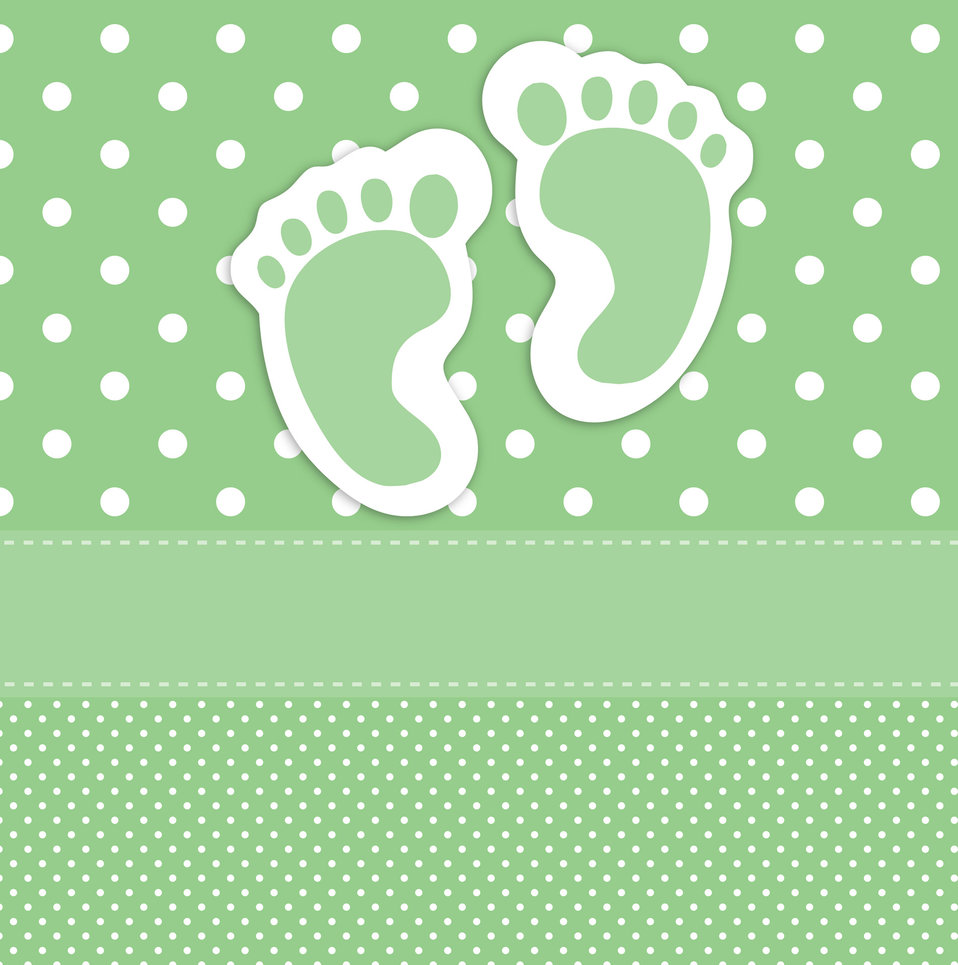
Baby footprints card template

Green polka dots baby footprints card template for scrapbooking.